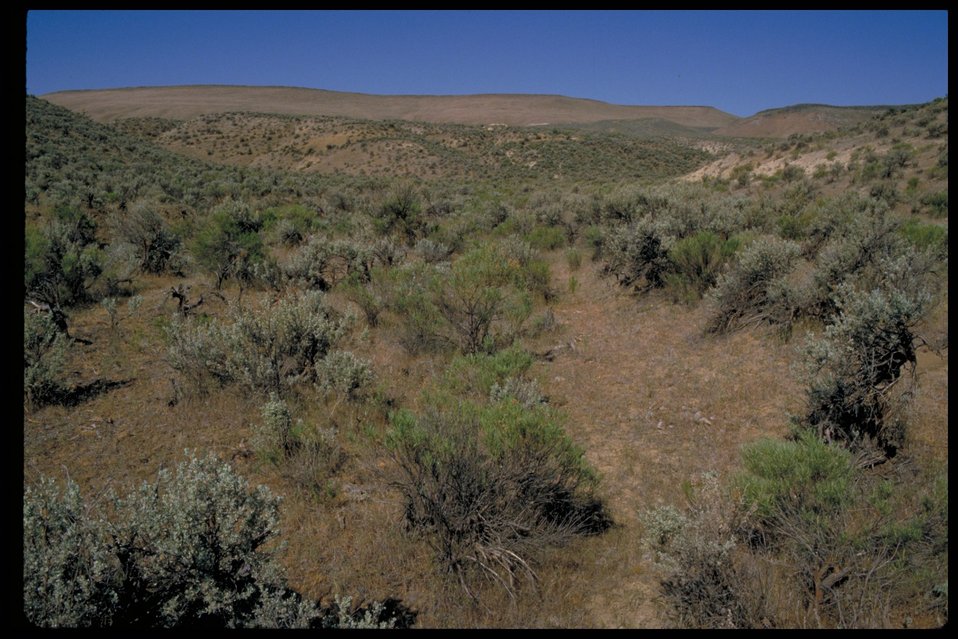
Oregon Trail west of King Hill Creek Lower Snake River District